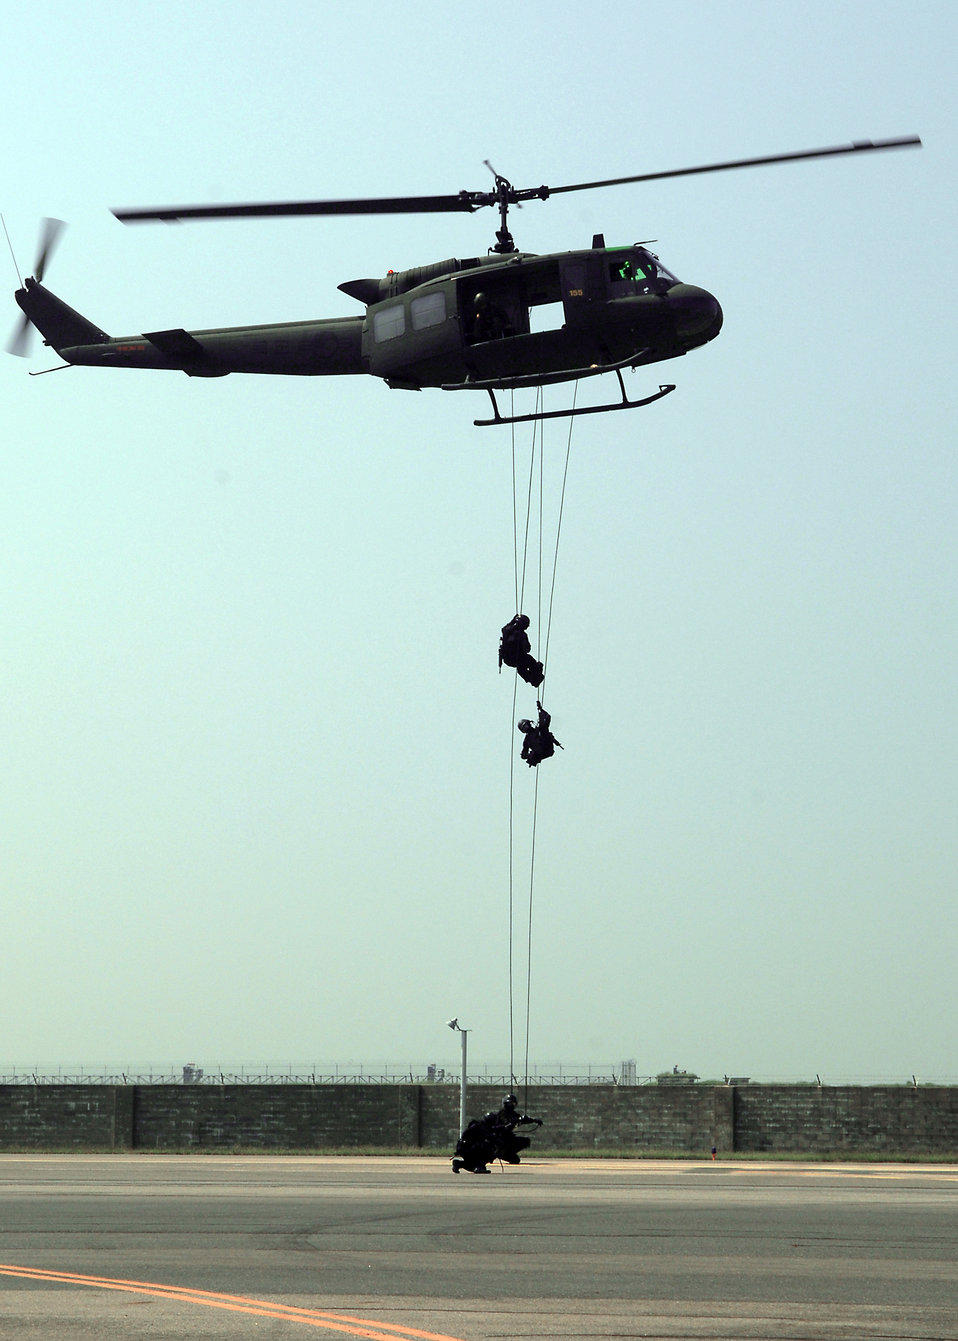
First responders

South Korean air force special forces respond to a simulated hostage exercise at the Gunsan airport Sept. 17, 2010, at Kunsan Air Base, South Korea. The 8th Civil Engineer Squadron fire department participated in the annual exercise, which is designed to enhance counterterrorism and prepare emergency responders for real-life situations.